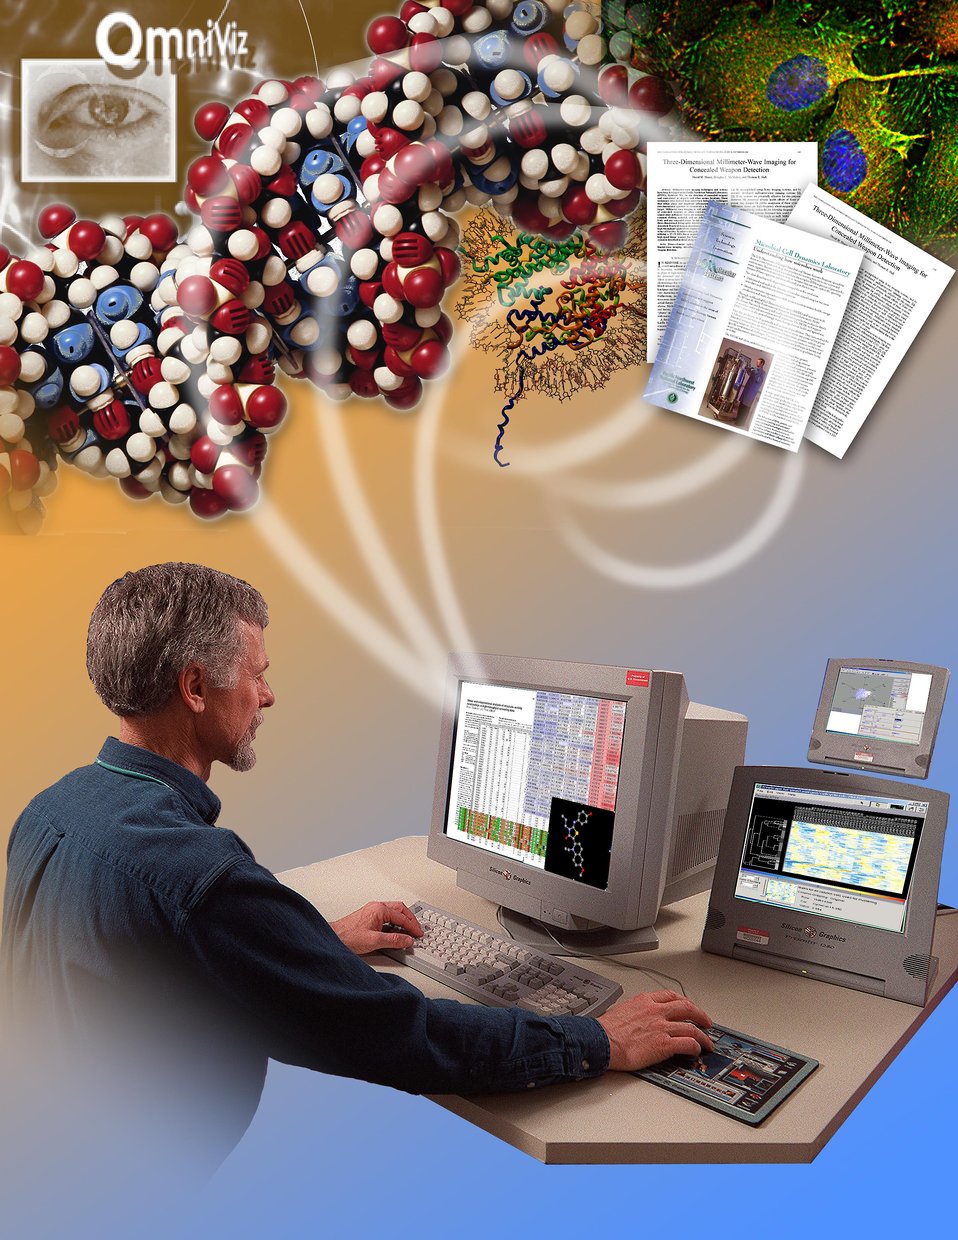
R&D 100 AWARD TECHNOLOGY DEVELOPED BY OMNIVIZ AND RESEARCHERS AT THE PACIFIC NORTHWEST NATIONAL LABORATORY.

THIS SOFTWARE CAN BE USED TO ANALYZE AND GRAPHICALLY DISPLAY LARGE COLLECTIONS OF NUMERIC, CATEGORICAL, GENOMIC SEQUENCE AND TEXT DATA PRIMARILY FOR LIFE AND CHEMICAL SCIENCE RESEARCH.